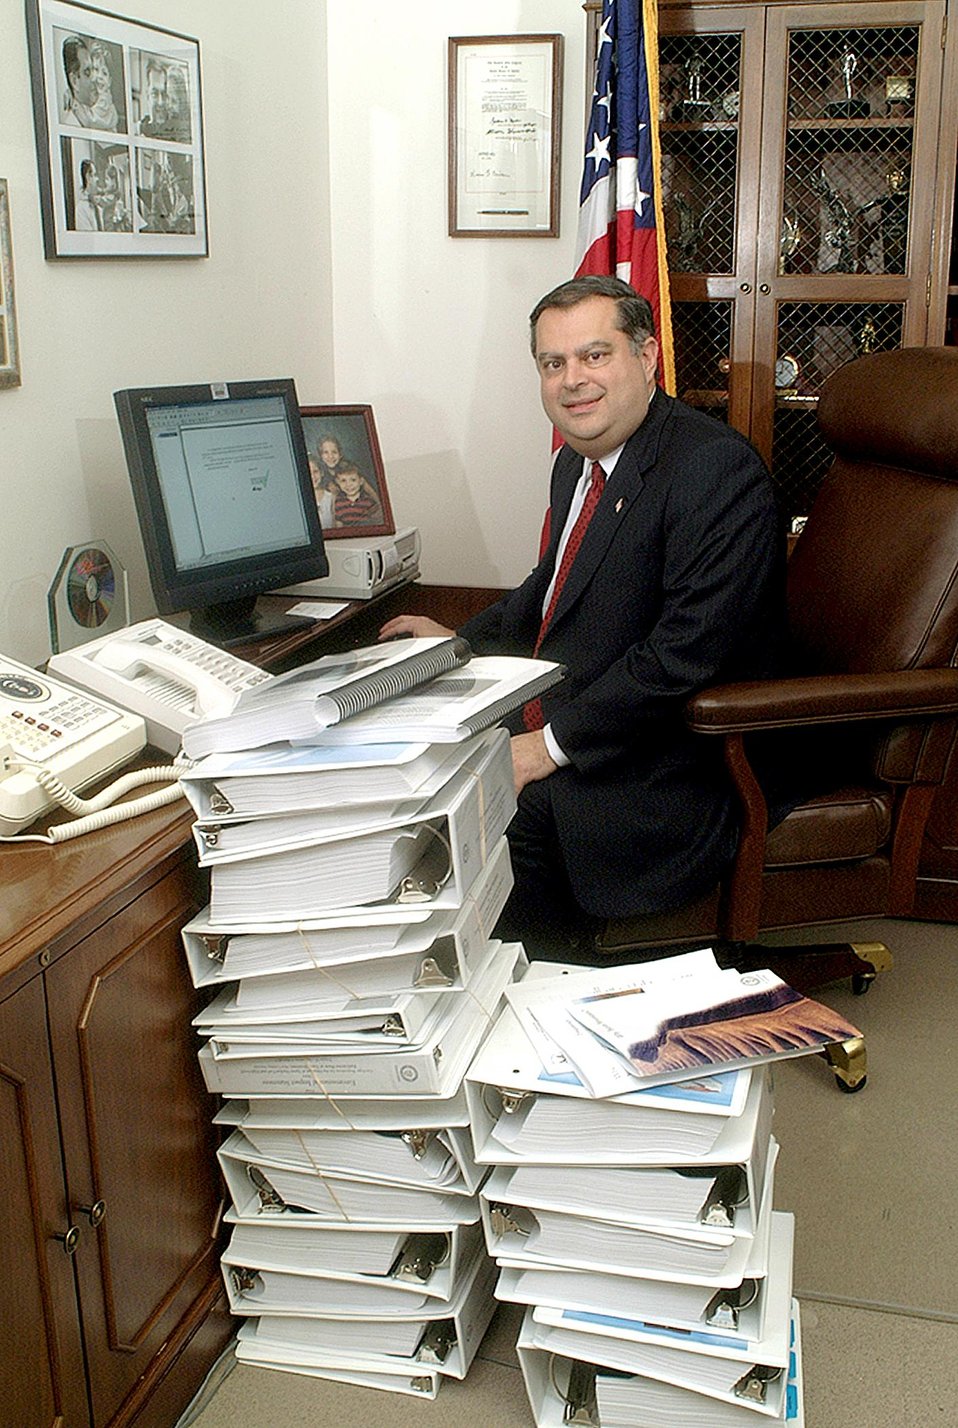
SECRETARY ABRAHAM RECOMMENDING YUCCA MOUNTAIN AS NATION'S LONG TERM GEOLOGICAL REPOSITORY FOR HIGH LEVEL WASTE.

ON FEBRUARY 14, 2002, SECRETARY SPENCER ABRAHAM DIGITALLY TRANSMITTED TO PRESIDENT GEORGE W. BUSH HIS FORMAL RECOMMENDATION OF THE YUCCA MOUNTAIN SITE IN NEVADA AS THE NATION'S LONG-TERM GEOLOGICAL REPOSITORY FOR HIGH-LEVEL WASTE.